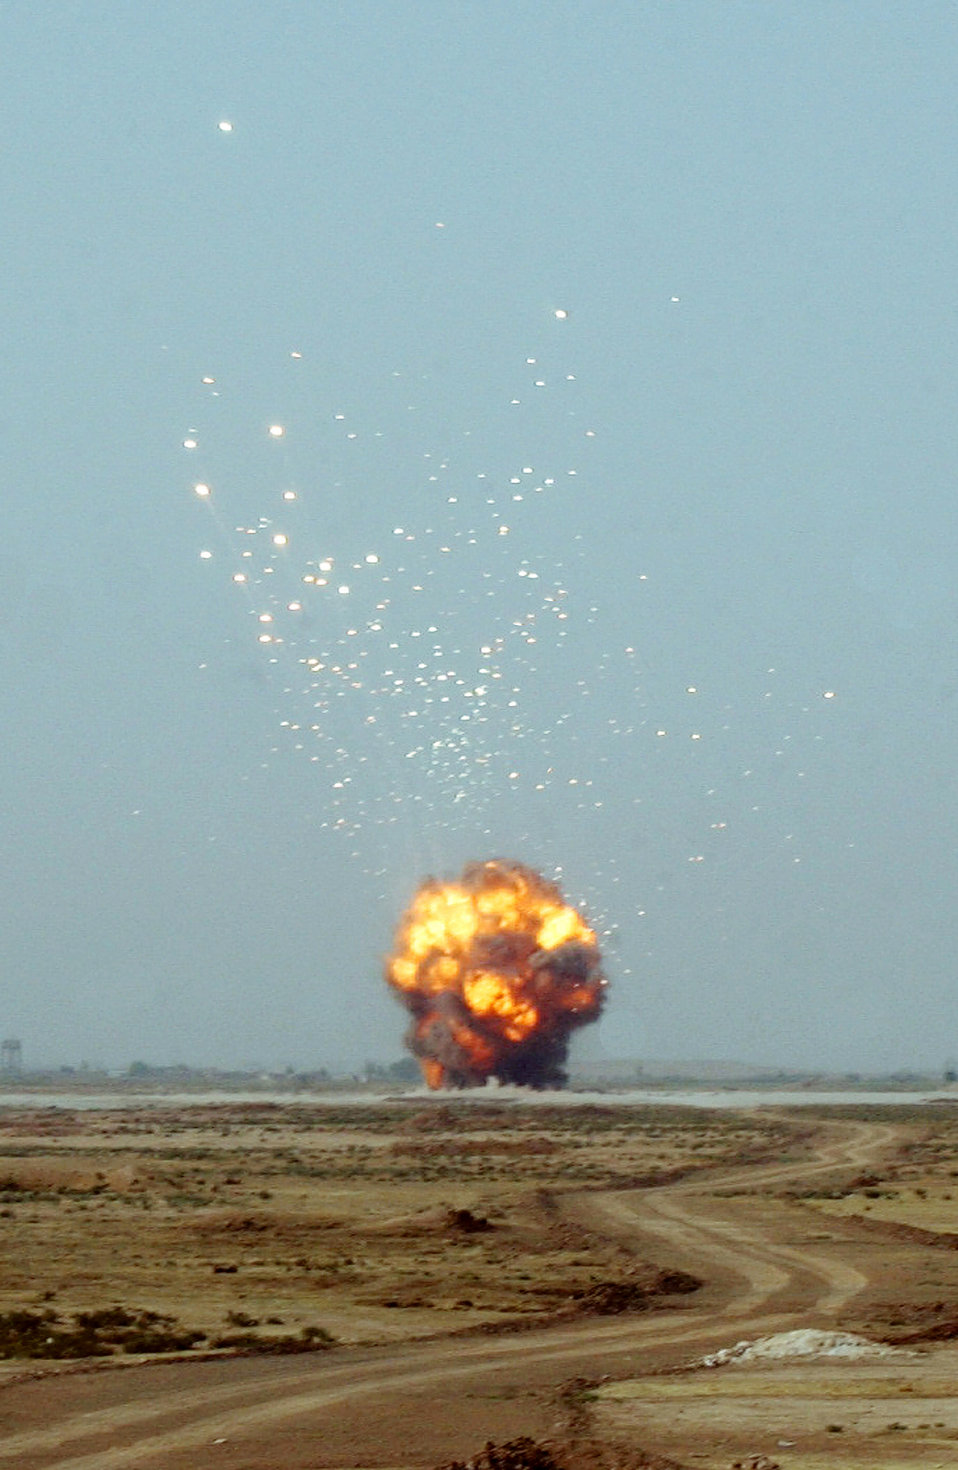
Operation Iraqi Freedom

KIRKUK AIR BASE, Iraq -- A ball of fire erupts as more than 18,000 pounds of munitions are destroyed by explosive ordnance disposal Airmen from the 506th Civil Engineer Squadron here. Munitions were found throughout the Kirkuk region.